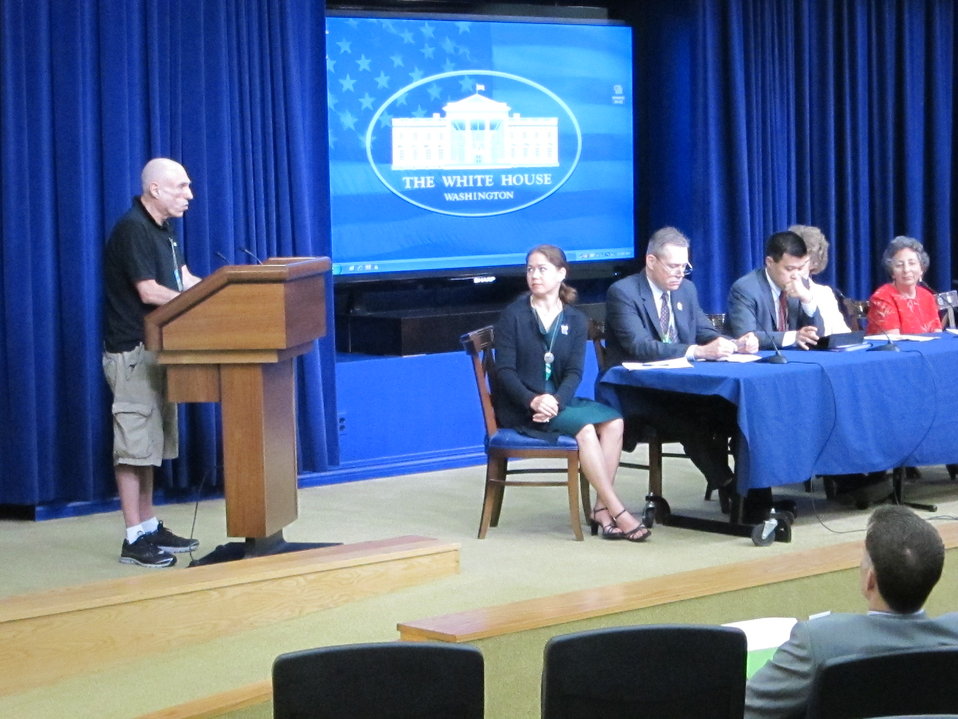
WH 2012 World Hepatitis Day Event